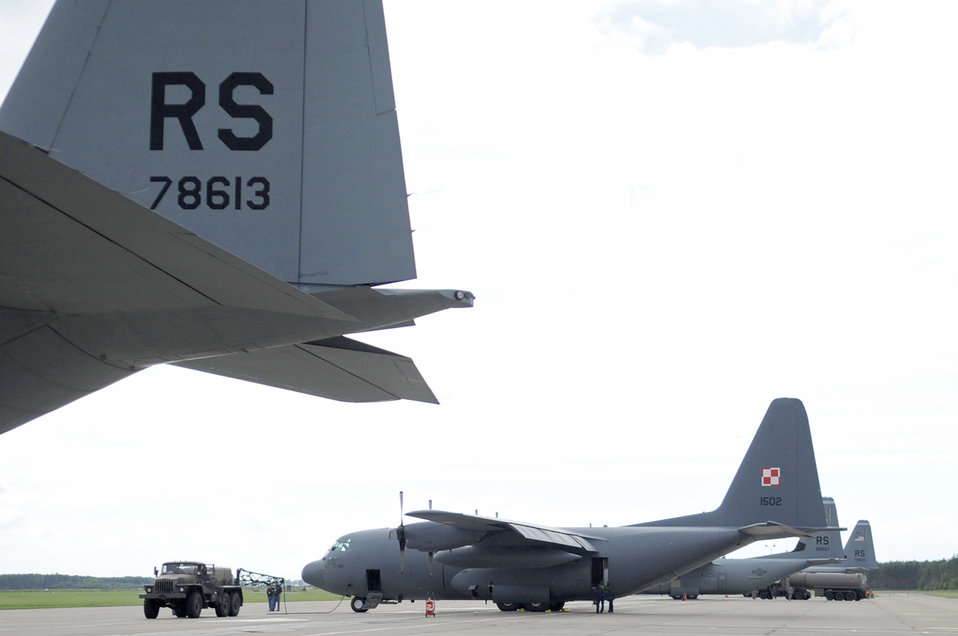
U.S., Polish military enhance partnerships through training

A C-130J and a Poland air force C-130E park on the flightline during a visit June 21, 2010, to Powidz Air Base, Poland.